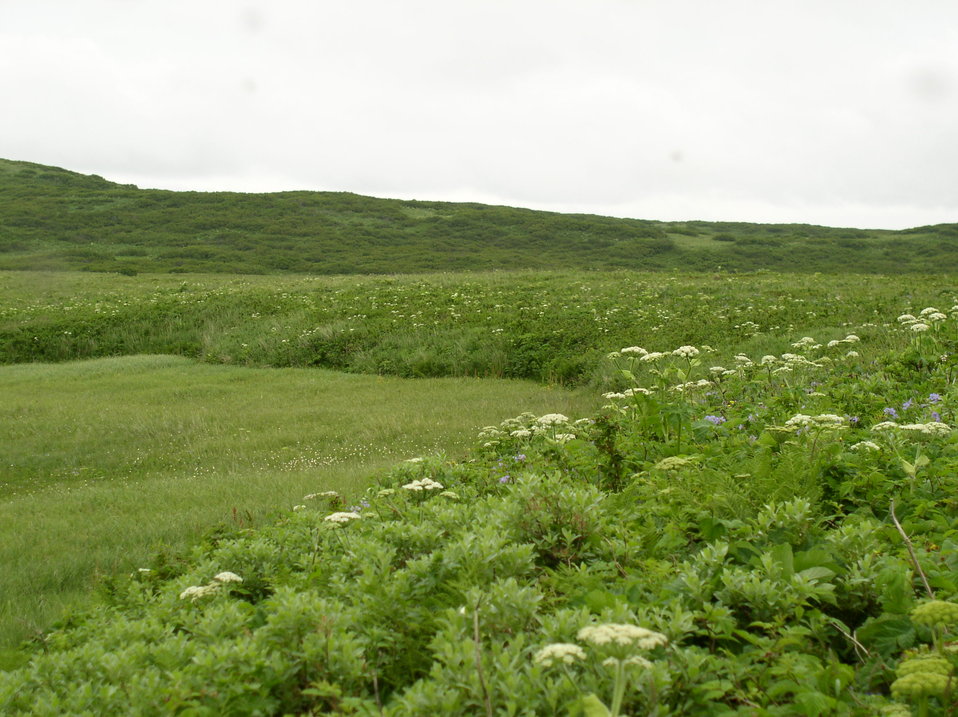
Izembek Landscape

Izembek National Wildlife Refuge